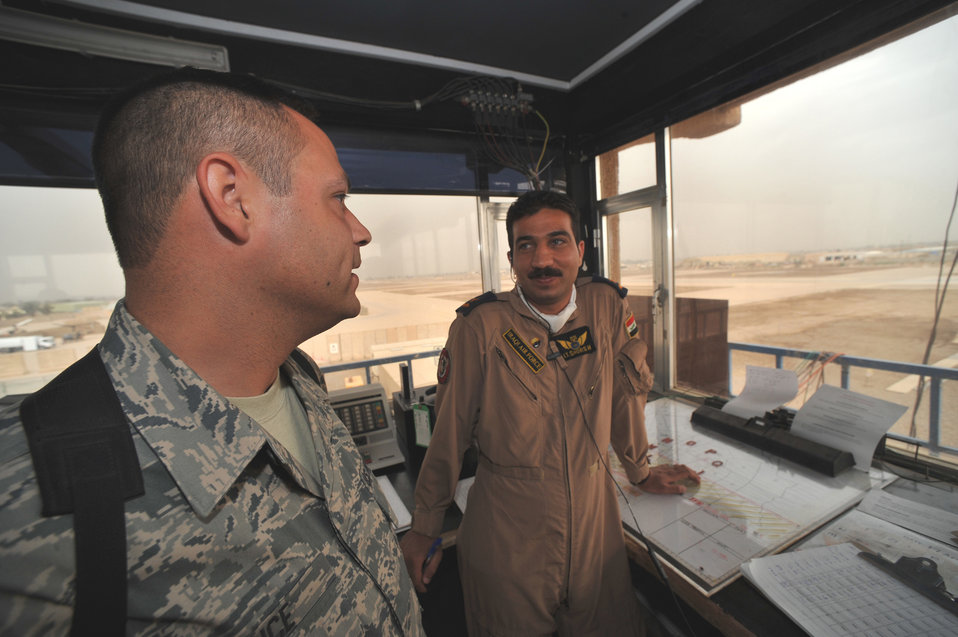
Iraqi airmen closer to controlling Taji tower

Staff Sgt. Shannon Grice talks recently with 2nd Lt. Shorsh, Iraqi air force trainee, about air traffic control at Camp Taji, Iraq. The Iraqi Training and Advisory Mission is in the process of transferring all operations to the Iraqi military for the U.S. drawdown. Sergeant Grice is assigned to the 347th Operational Support Squadron at Yokota Air Base, Japan.